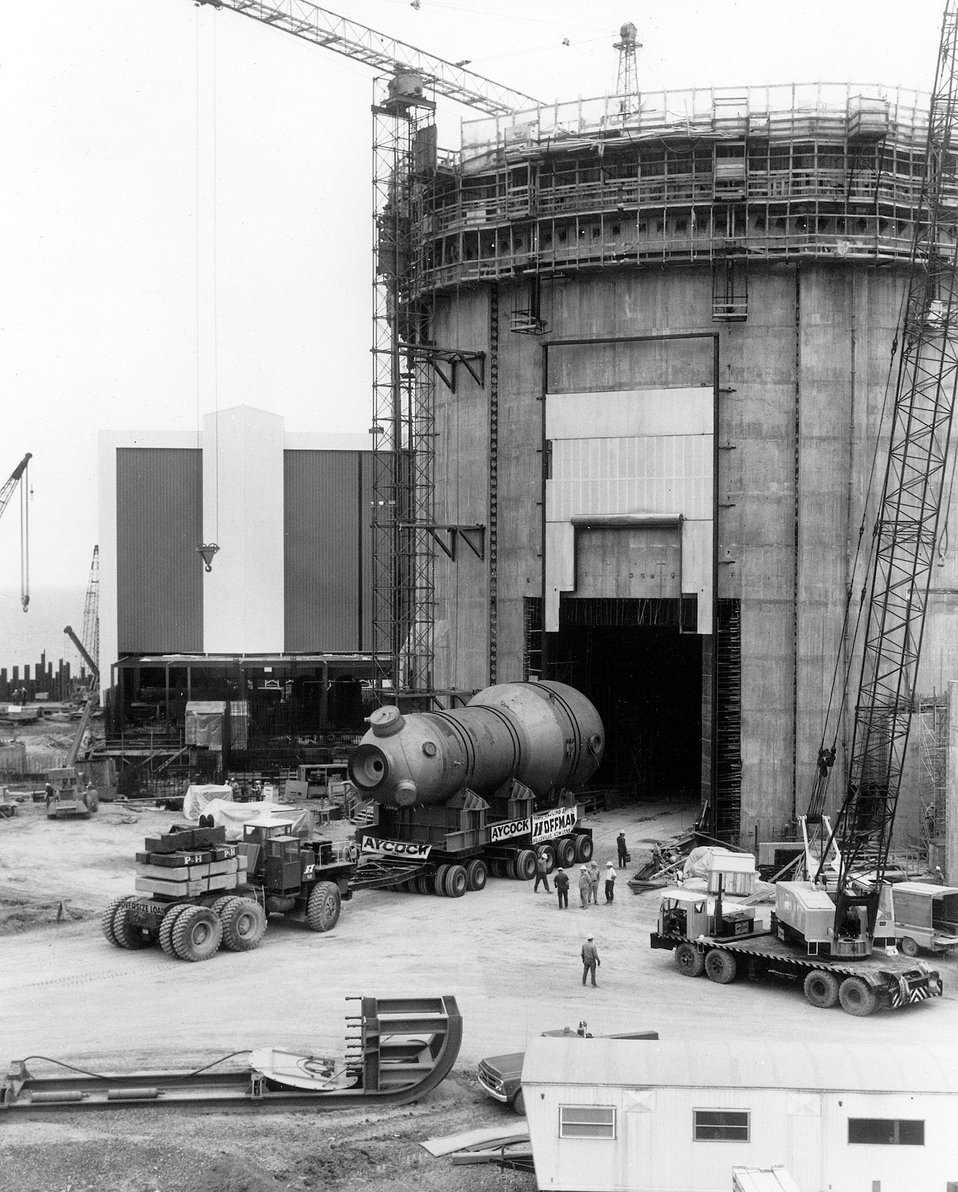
Steam generator for the first unit at Baltimore Gas and Electric's Calvert Cliffs Nuclear Power Plant is moved to the containment building. Circa 1971.